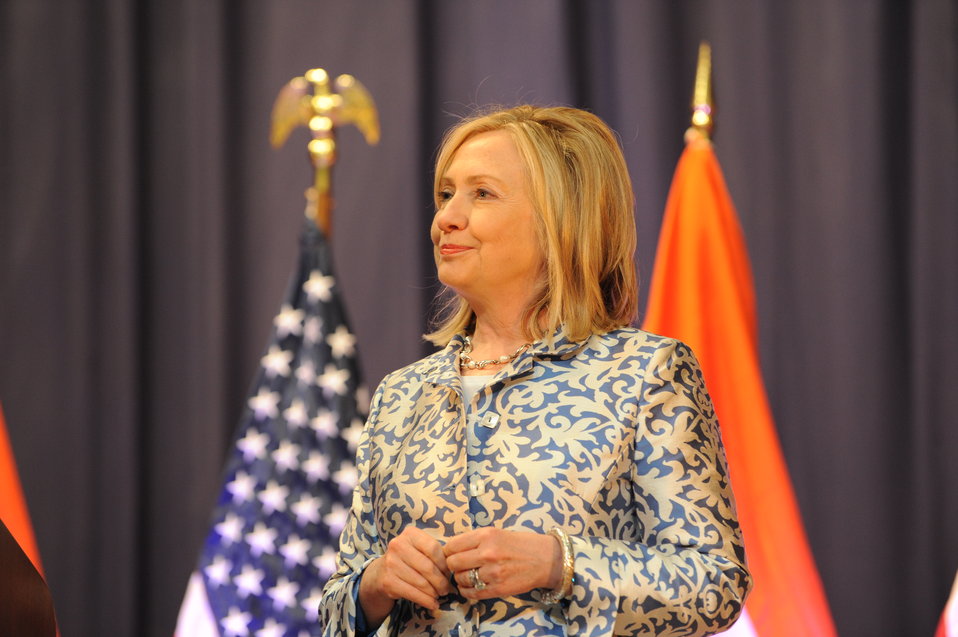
Secretary Clinton Takes the Stage To Deliver Remarks on “India and the United States: A Vision for the 21st Century”

U.S. Secretary of State Hillary Rodham Clinton takes the stage to deliver remarks on “India and the United States: A Vision for the 21st Century,” at Anna Centenary Library in Chennai, India, on July 20, 2011. [Paul Cohn/ State Department photo]